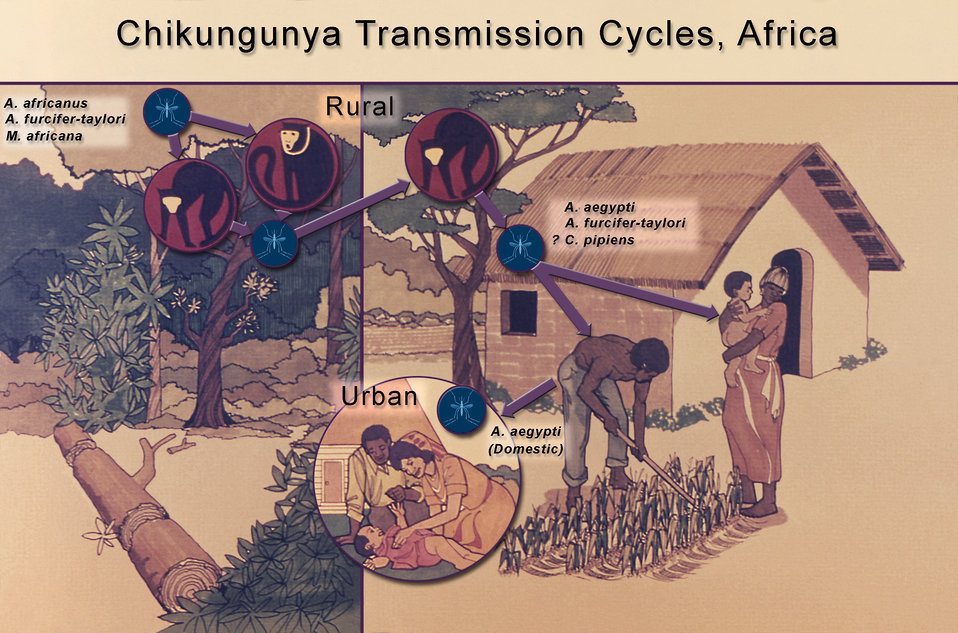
This illustration depicts the transmission cycles implemented by the disease known as Chikungunya fever. The virus responsible for the disease is a member of the genus Alphavirus, in the family Togaviridae. This particular diagram lays out the modes of possible transmission in Africa.